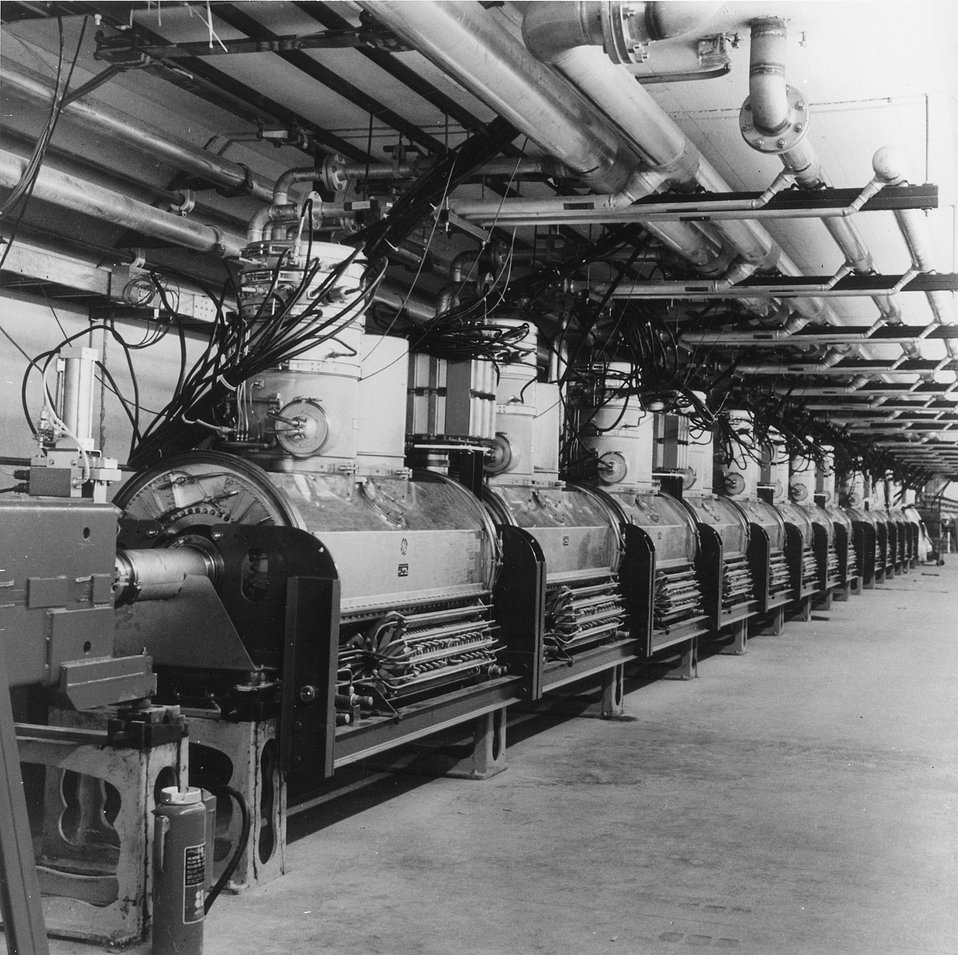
Radio frequency acceleration cavities in the Main Ring of the AEC NAL. c.1972